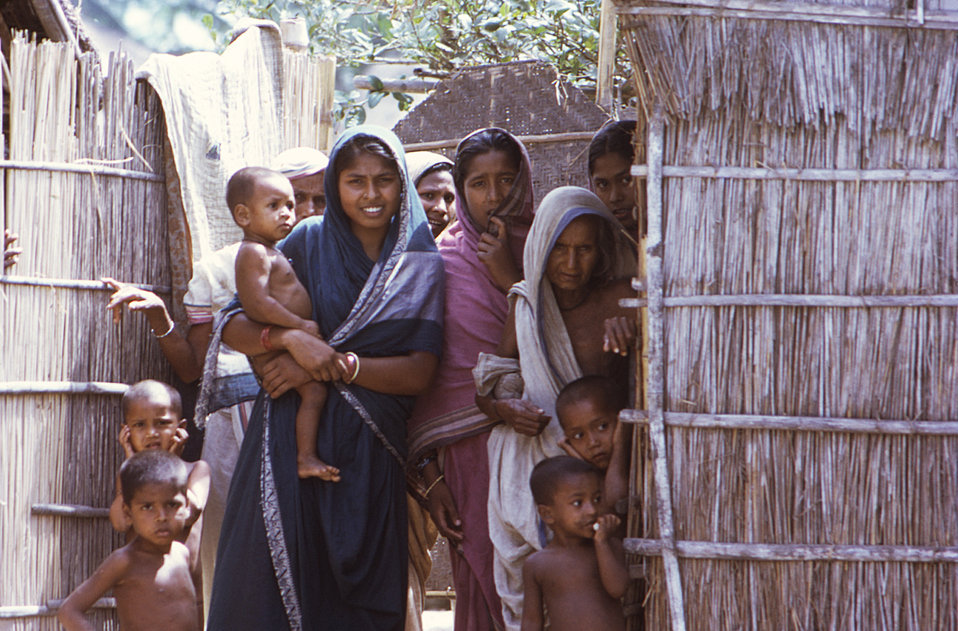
Photographed in June, 1975, this historic image depicts a number of women and children in the city of Nandail, Bangladesh. Known as an upazila, Nandail is an subdivision of the Bangladesh district of Mymensingh. The image was captured during the eradication efforts instituted at that time, which resulted in the worldwide eradication of smallpox. It's difficult to tell from this photograph as to whether or not any of these Nandail inhabitants had been infected.Signs and Symptoms: